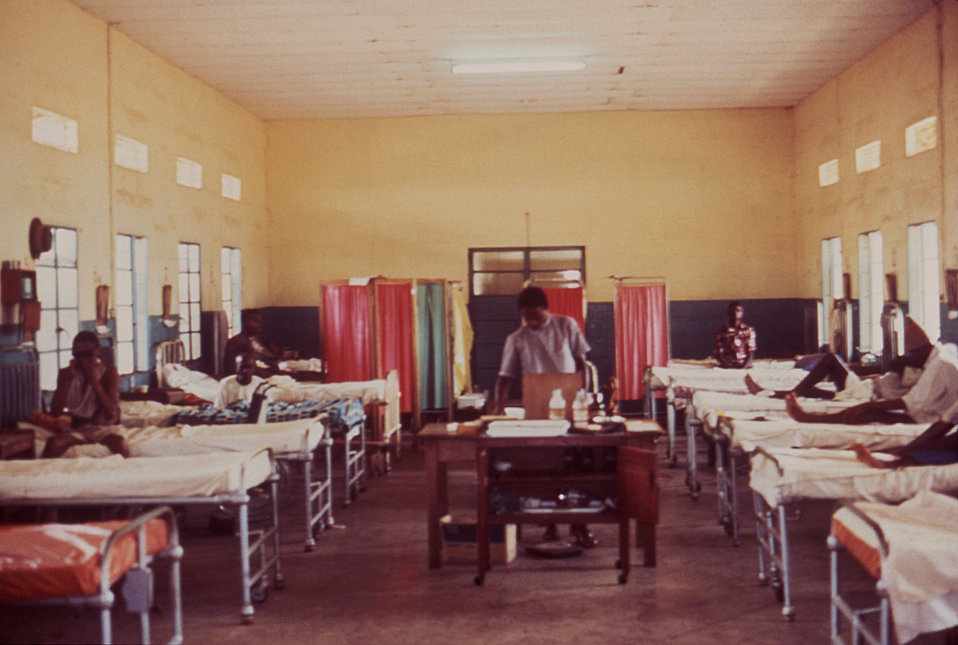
This 1977 image depicts the men's ward housing those affected by Lassa fever in Segbwema, Sierra Leone.